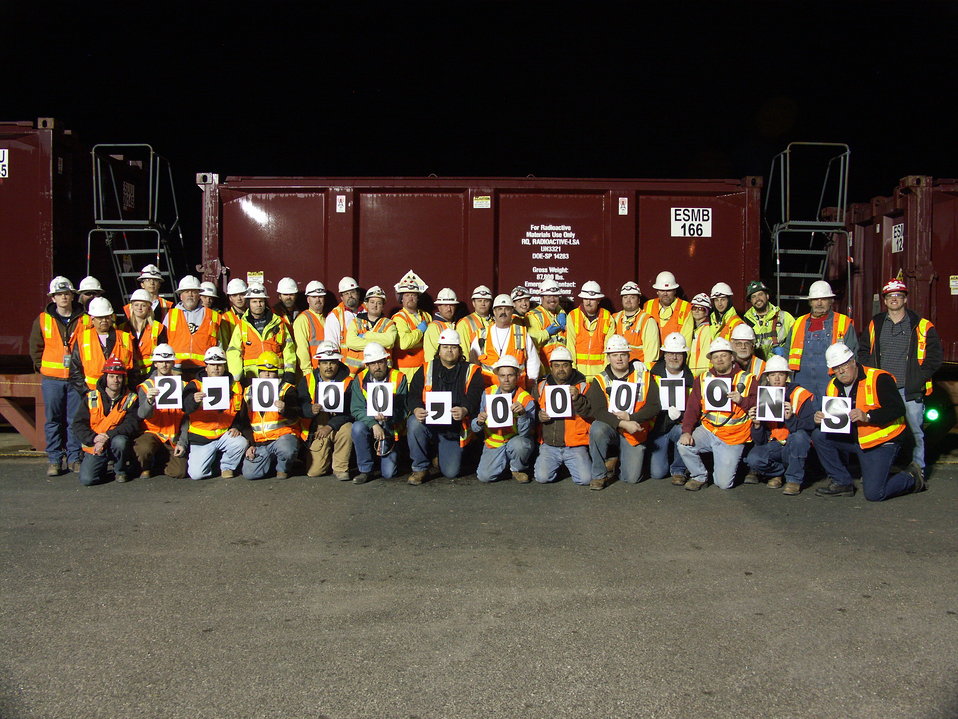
Moab Project Disposes 2 Million Tons of Uranium Mill Tailings with Recovery Act Funds

Recovery Act workers on the night shift loaded the container carrying the 2 millionth ton of tailings to be shipped to the Crescent Junction disposal site.